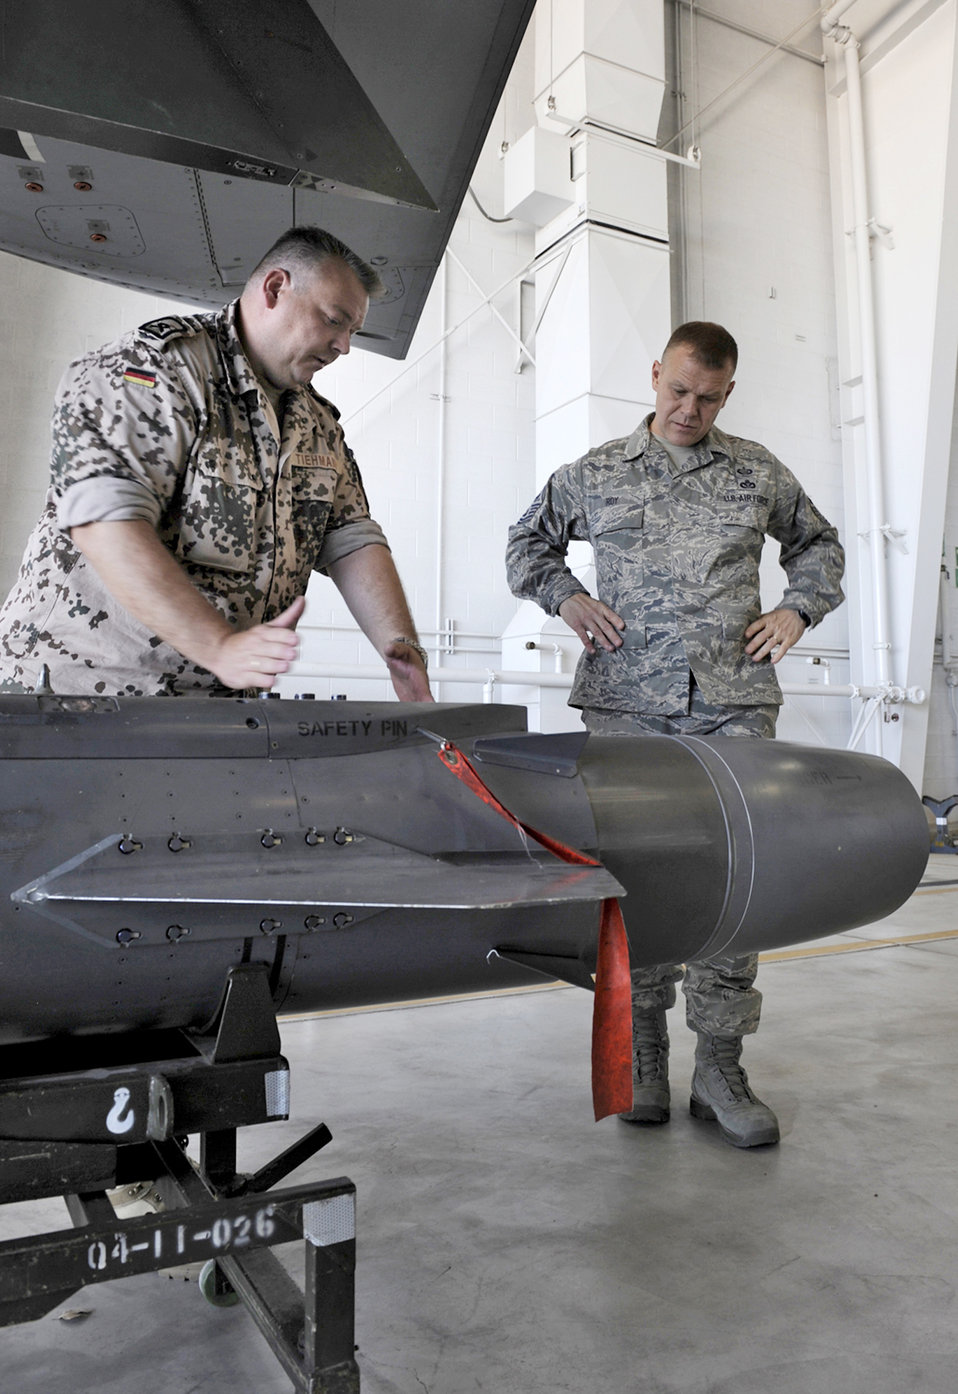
AF top enlisted leader visits Holloman

German air force Master Sgt. Joerg Tiehmann talks with Chief Master Sgt. of the Air Force James Roy about the weapon capabilities of the German aircraft, the Tornado. Chief Roy toured the base, talked to Airmen and answered their questions. Sergeant Tiehmann is a German air force first line maintenance supervisor of the training and standardization team.